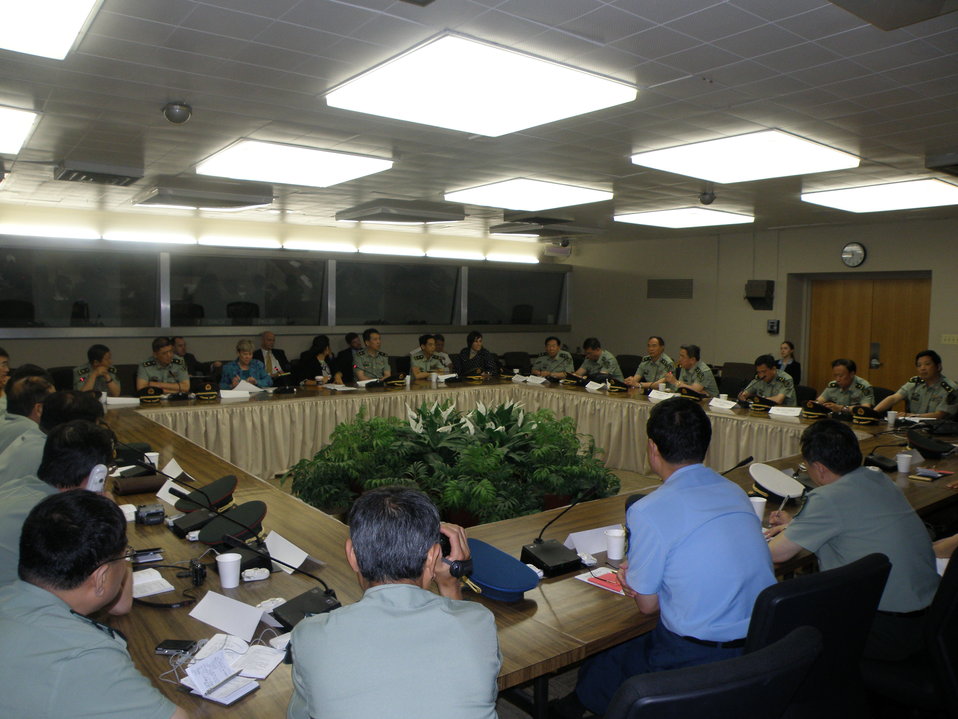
Assistant Secretary Gottemoeller Meets With Chinese Senior Military Officers

Assistant Secretary of State for Arms Control, Verification and Compliance Rose Gottemoeller meets with a group of visiting senior military officers from China, at the U.S. Department of State in Washington, D.C., on June 16, 2011.